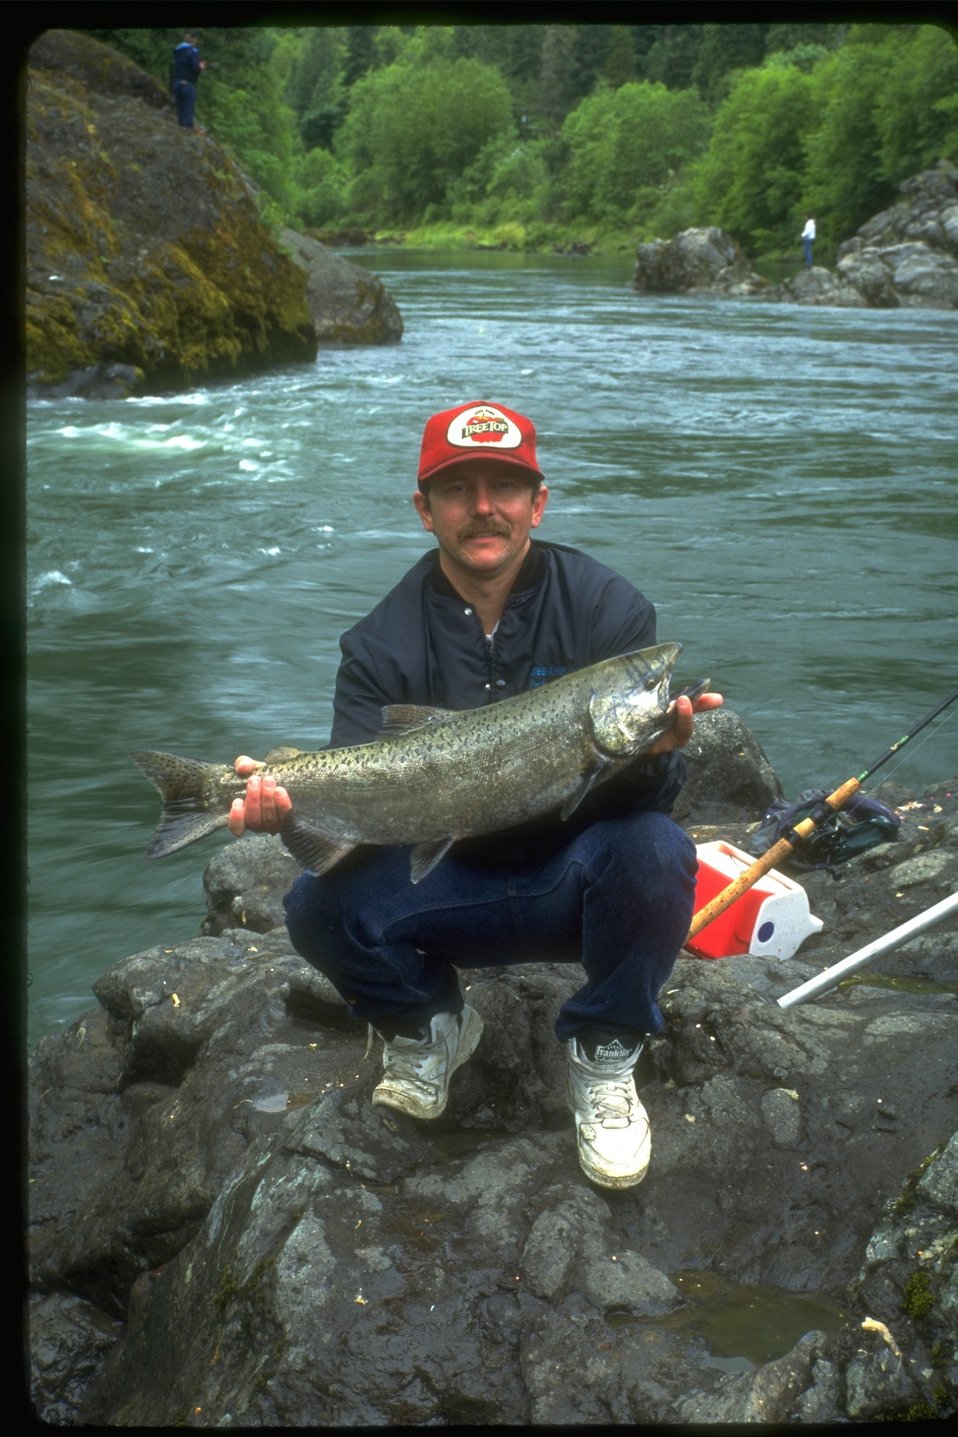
Fisherman holding large chinook salmon in his arms after a long day of fishing.